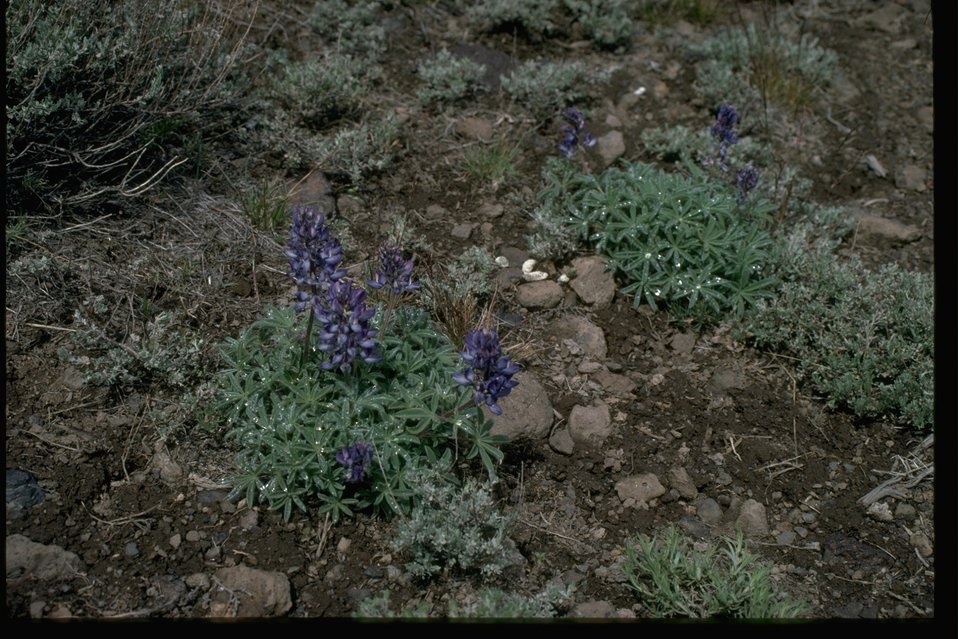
Lupine on the center ridge of the Trout Creek Mountains.